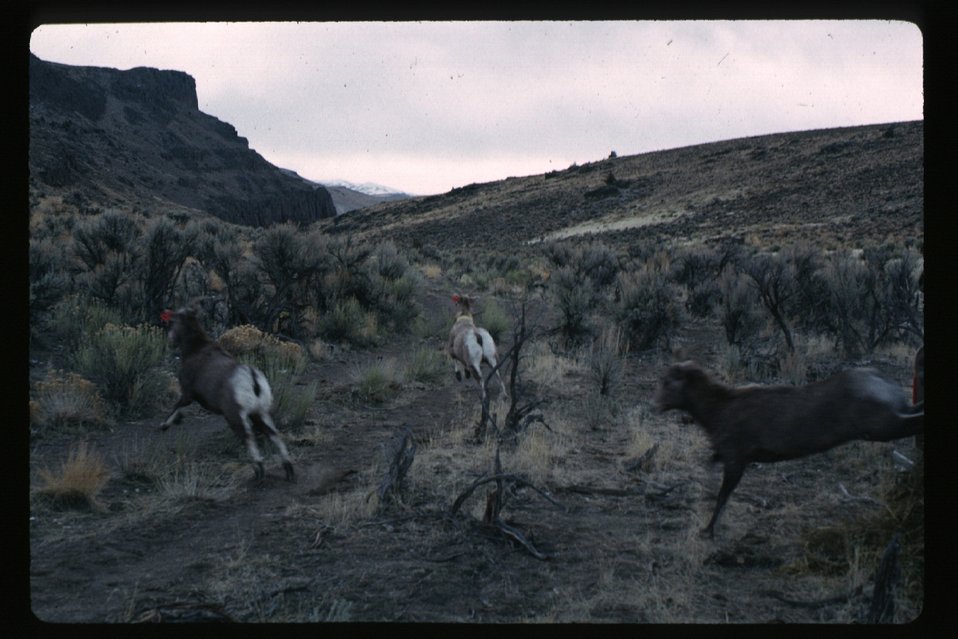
Bighorn Sheep Wildlife LSRD Lower Snake River District